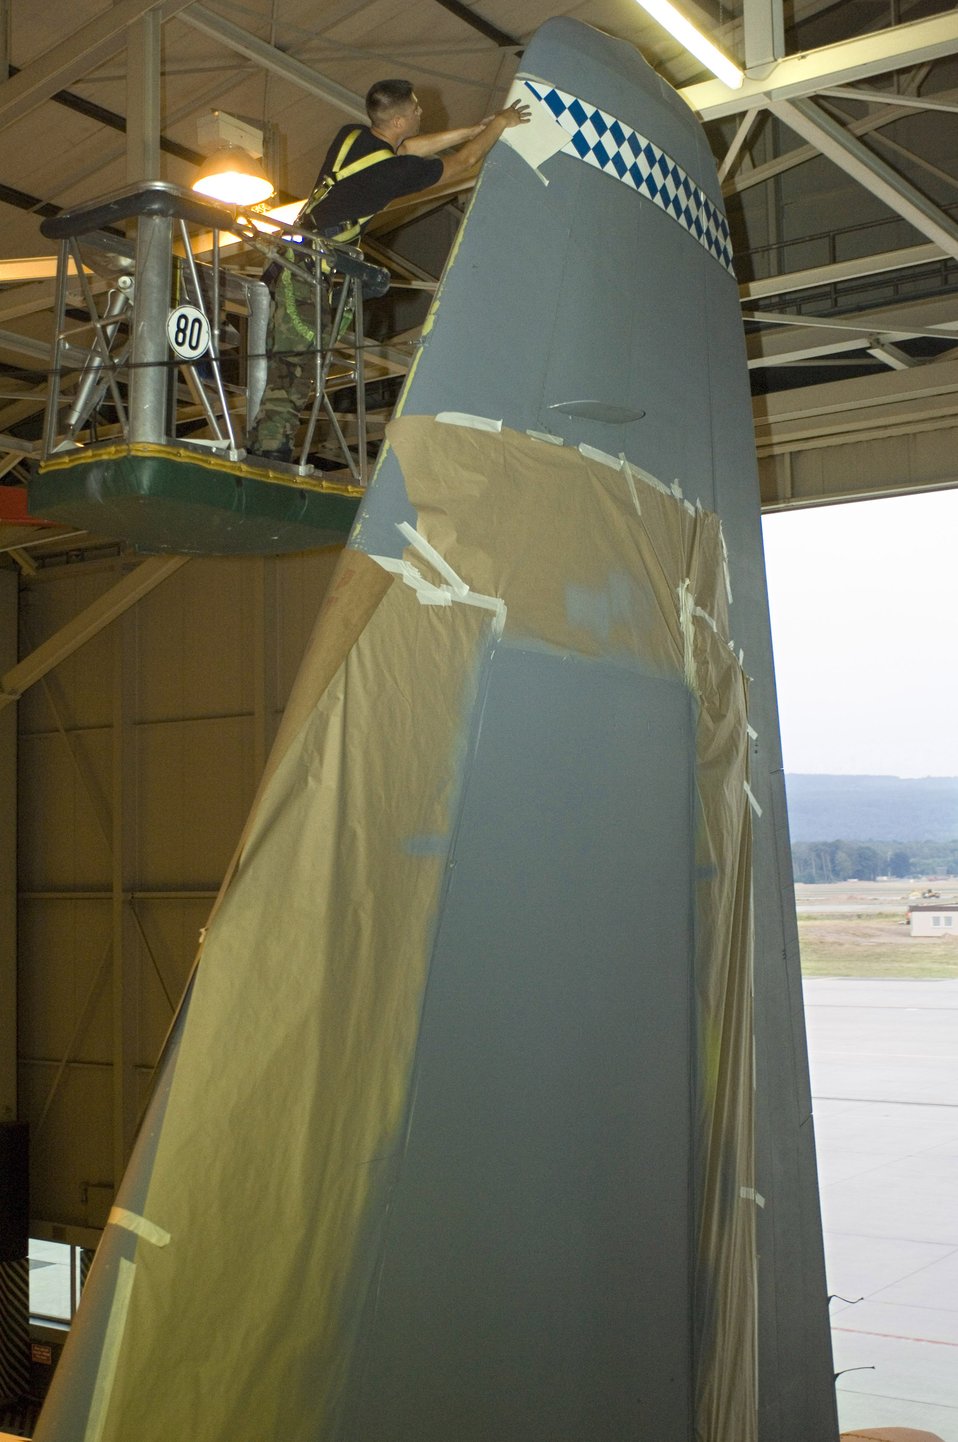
Telltale signs

Staff Sgt. James Cole puts the mark of the